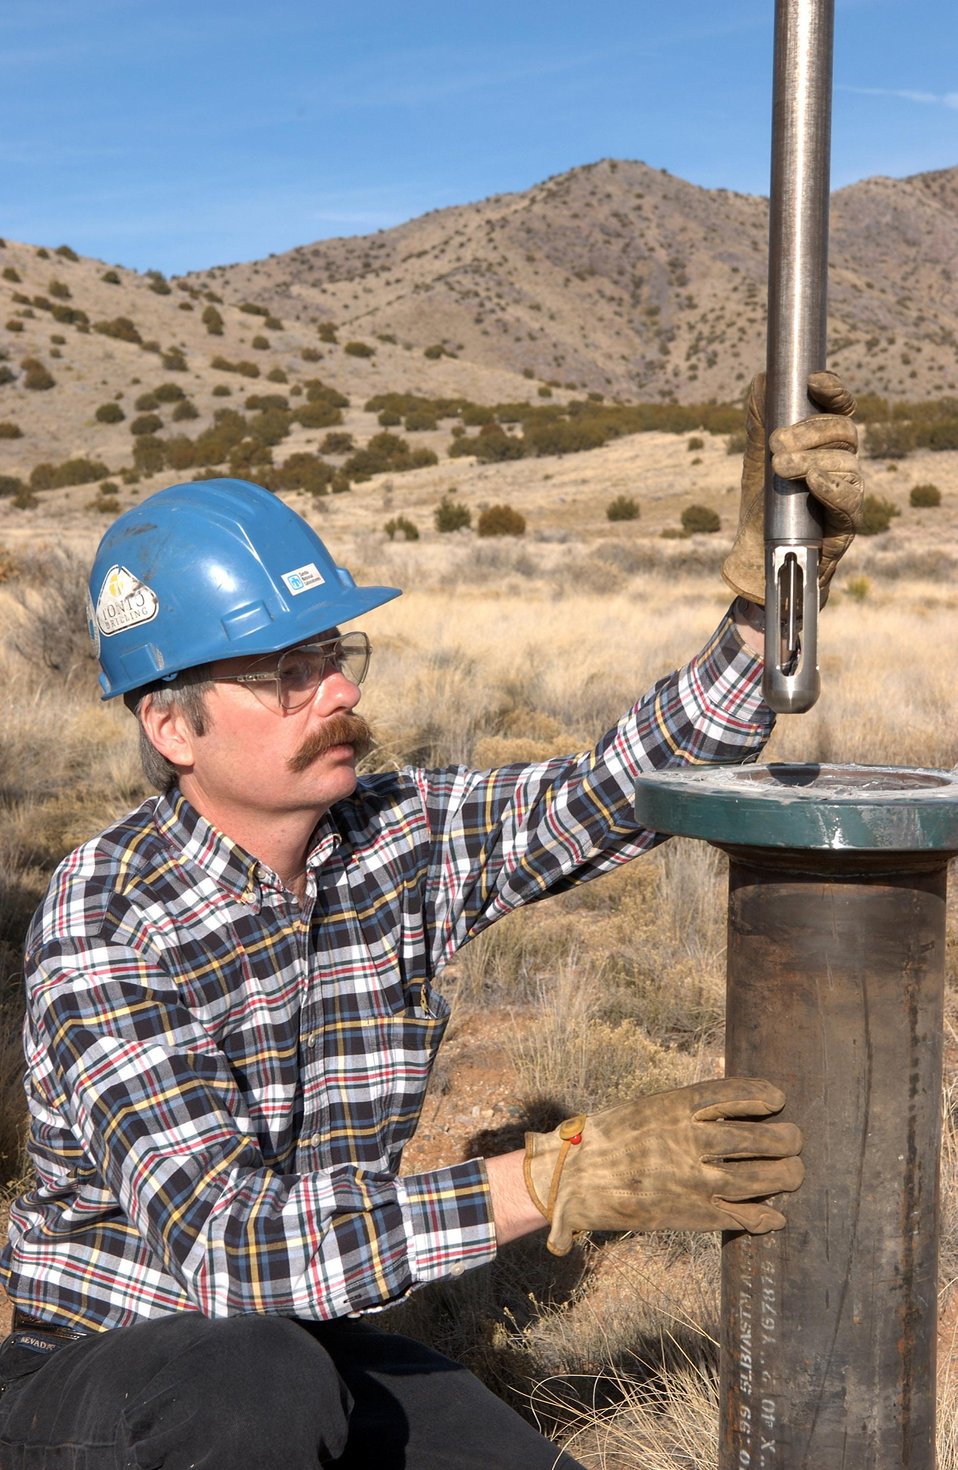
SANDIA TECHNICIAN CHECKING HIGH-TEMPERATURE DOWNHOLE TOOL THAT CAN HELP EARTHQUAKE RESEARCHERS.

GEOTHERMAL INSTRUMENTS DESIGNED AND BUILT BY SANDIA ARE PLAYING AN IMPORTANT ROLE IN EARTHQUAKE RESEARCH AROUND THE GLOBE. ONE SUCH INSTRUMENT LOCATED 200 FEET BELOW THE SURFACE IN A GEOTHERMAL WELL IN CENTRAL CALIFORNIA'S LONG VALLEY CALDERA, RECORDED THE DEVASTING TSUNAMI-CAUSING 9.0 MAGNITUDE EARTHQUAKE NEAR SUMATRA ON DECEMBER 26, 2004.